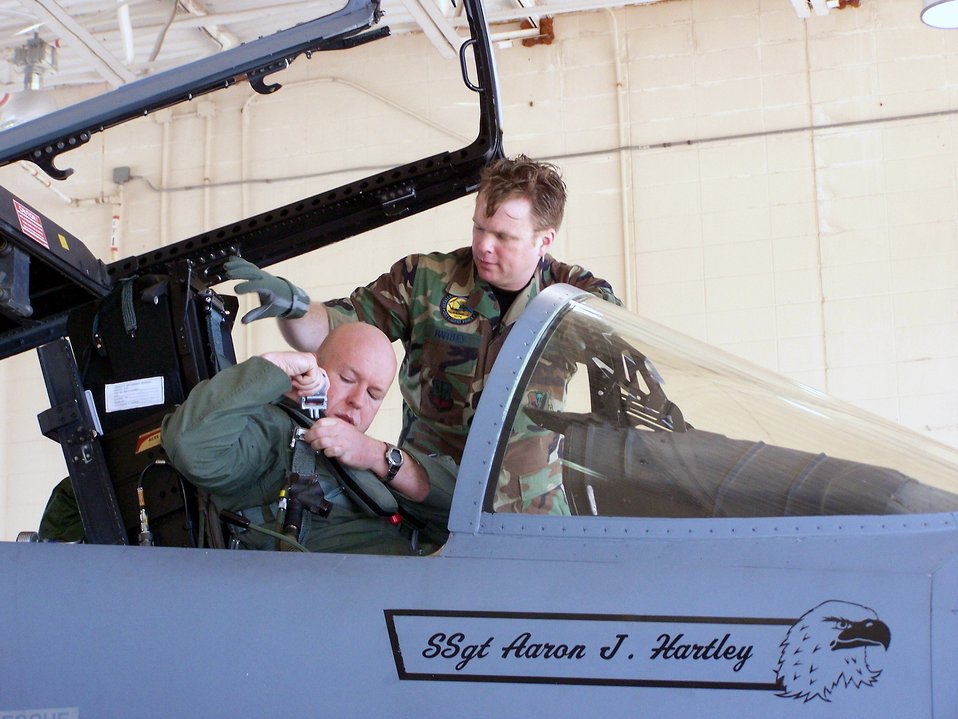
Celestial Eagle: Historic anti-satellite mission remembered

Capt. Todd Pearson is assisted by Staff Sgt. Aaron Hartley Sept. 13 during the Celestial Eagle Remembrance Flight at Homestead Air Reserve Base, Fla. Captain Pearson is with the 390th Fighter Squadron at Mountain Home Air Force Base, Idaho. Sergeant Hartley is a crew chief and Florida Air National Guard member assigned th the 125th Fighter Wing, Det 1.Sergeant Hartley suggested the idea for the rememberance flight after learning of the original flight while researching the history of the F-15s assigned to the 125th FW. Captain Pearson's father, retired Maj. Gen. Doug Pearson, flew the exact same F-15 Eagle, now assigned to the 125th FW, exactly 22 years prior while accomplishing the only successful satellite kill by an aircraft launched missile in history.